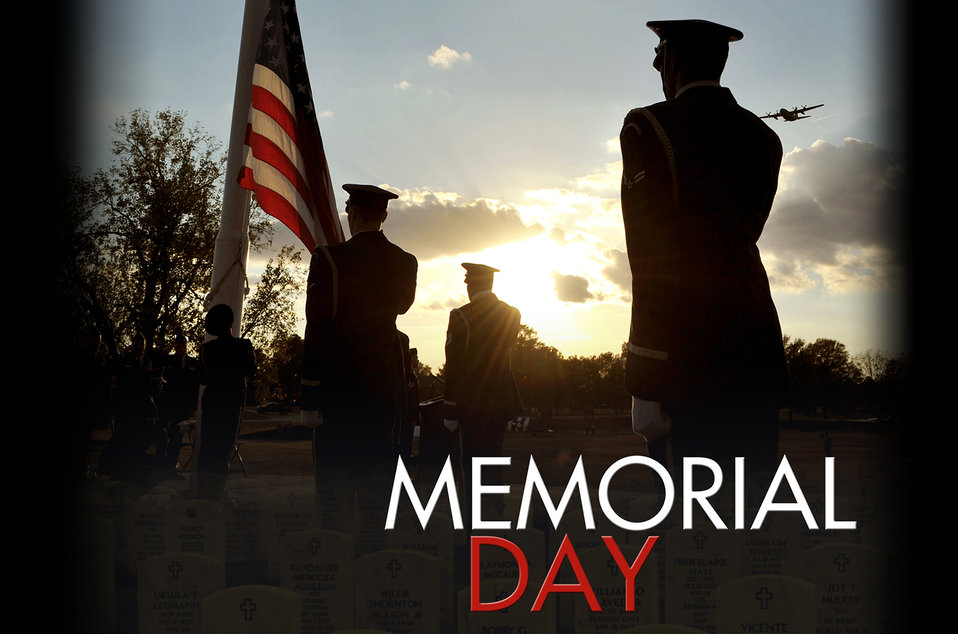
Memorial Day 2011